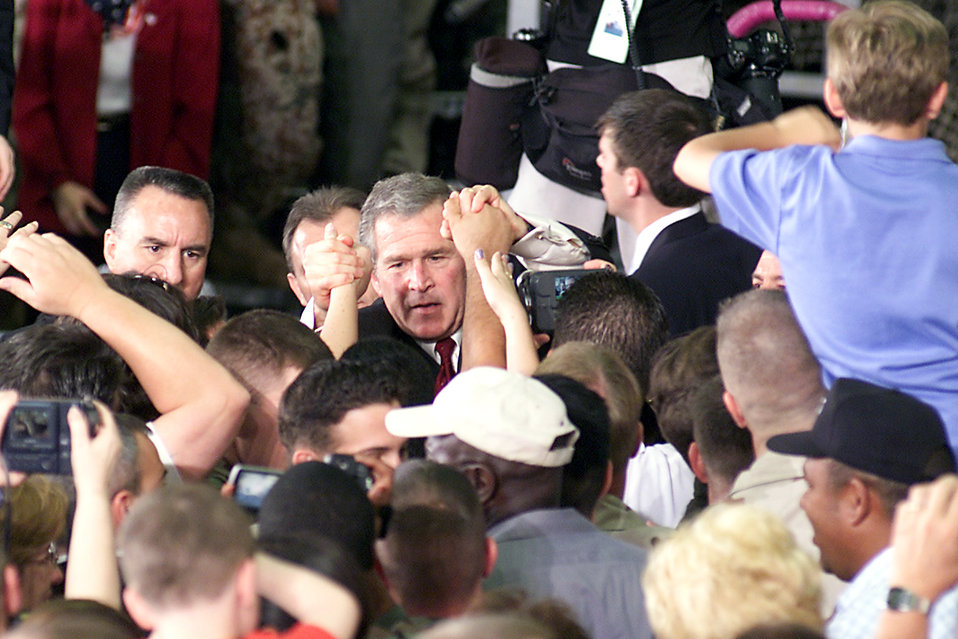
Bush visit

MACDILL AIR FORCE BASE, Fla. -- President George W. Bush shakes hands with an enthusiastic crowd during his visit here March 26. President Bush also ate lunch with 150 people at U.S. Central Command before returning to Washington.